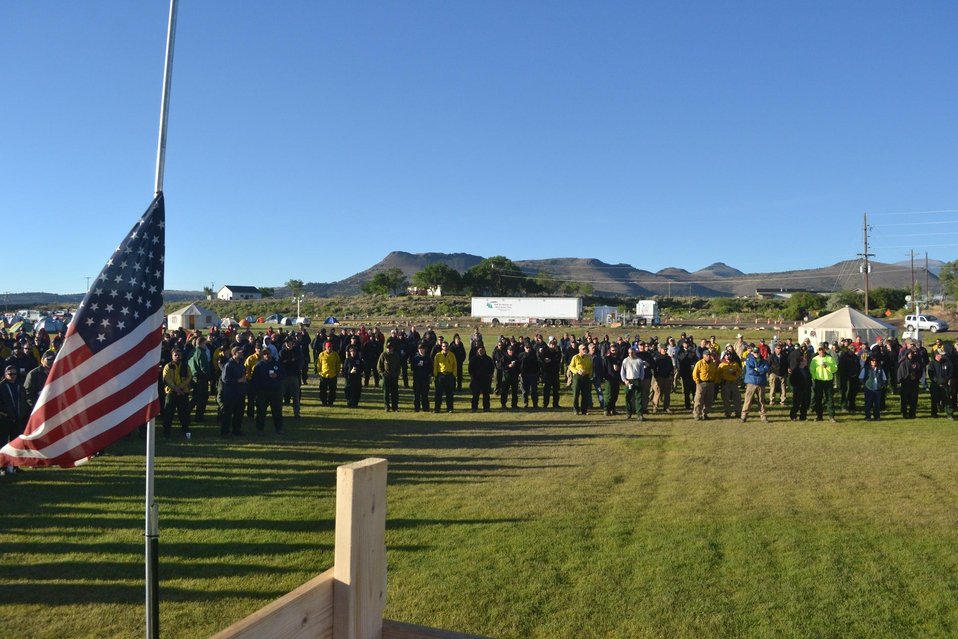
The morning Briefing at the West Fork Complex Fire Camp in Del Norte, CO holds a memorial service for the 19 fire fighters who died fighting the Yarnell Hill Fire on Jul. 1, 2013. The West Fork Complex Fire is made of four fires, Papoose Fire, East Zone of West Fork Fire, West Zone of West Fork Fire, and Windy Pass Fire. The fires located in the vicinity of Pagosa Springs, CO began on Jun. 05, 2013 by lightning strikes. The multiple fires have consumed approximately 109,615 acres.